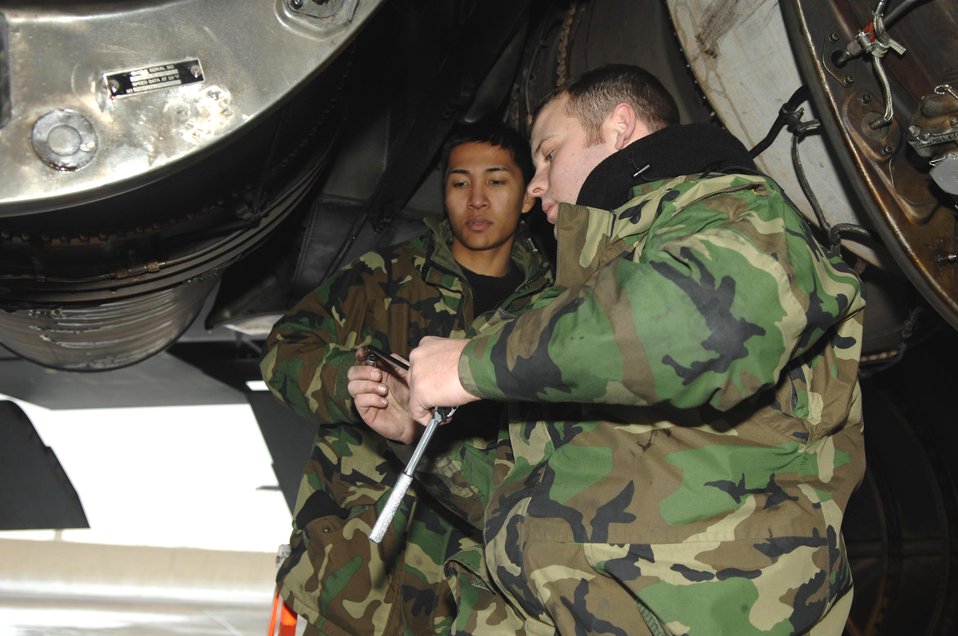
Enduring the cold

Staff Sgt. Justin McNichols (right) and Airman 1st Class Kenny Javar work on replacing a strut valve on a B-52 Stratofortress Jan. 8 at Minot Air Force Base, N.D. The workers endured sub-zero temperatures and gusts of wind up to 50 mph. Both Airmen are with the 5th Aircraft Maintenance Squadron.